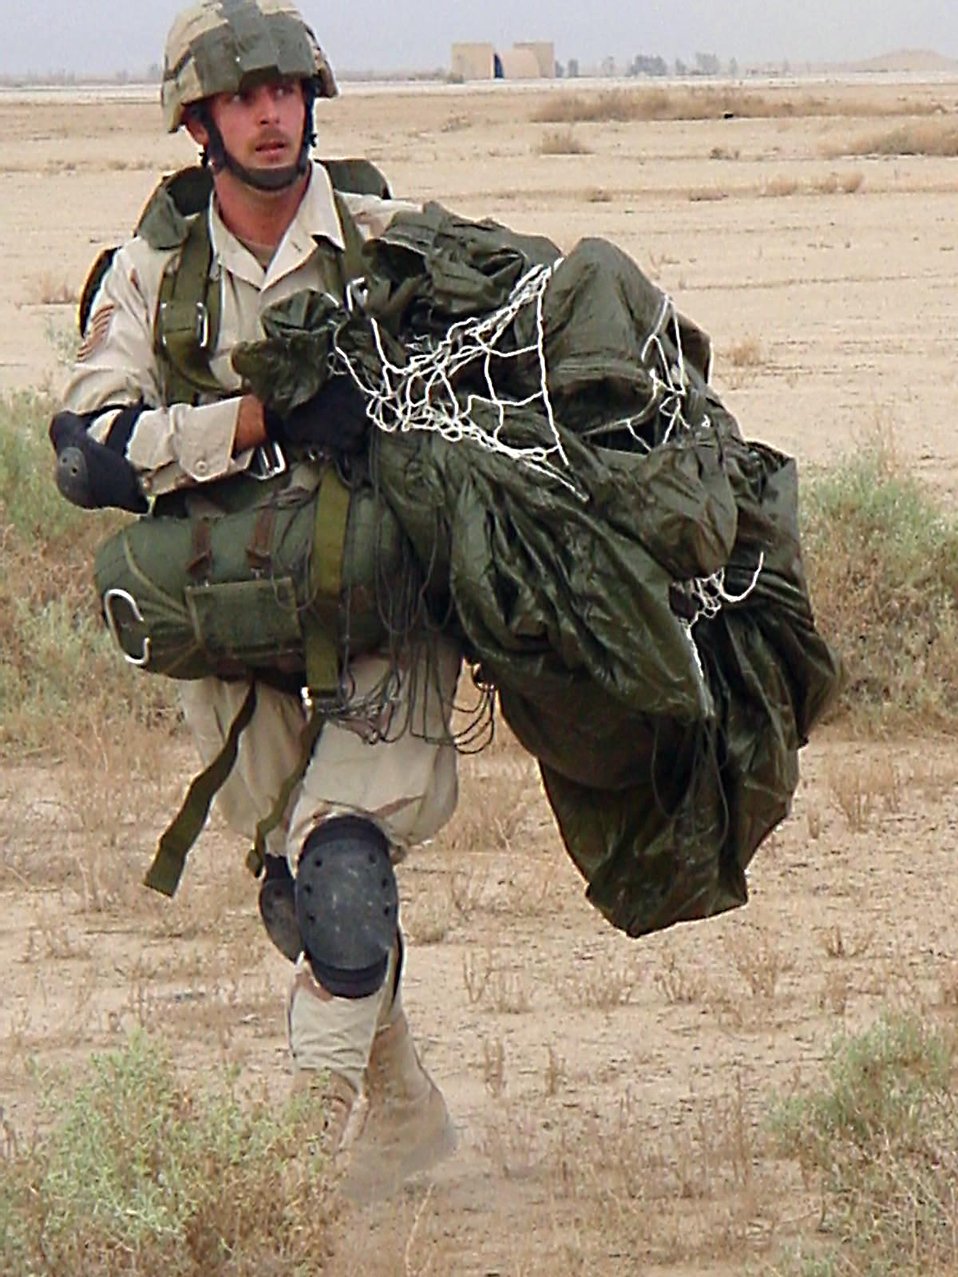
Drop zone

OPERATION IRAQI FREEDOM (AFPN) -- Tech. Sgt. John Reiland walks off the Maltz Drop Zone at Tallil Air Base in southern Iraq, after parachuting in. Airmen named the zone after Master Sgt. Mike Maltz, a pararescue jumper killed March 23, 2003 in an HH-60G Pave Hawk crash in Afghanistan. Reiland is assigned to the 407th Expeditionary Security Forces Squadron here.